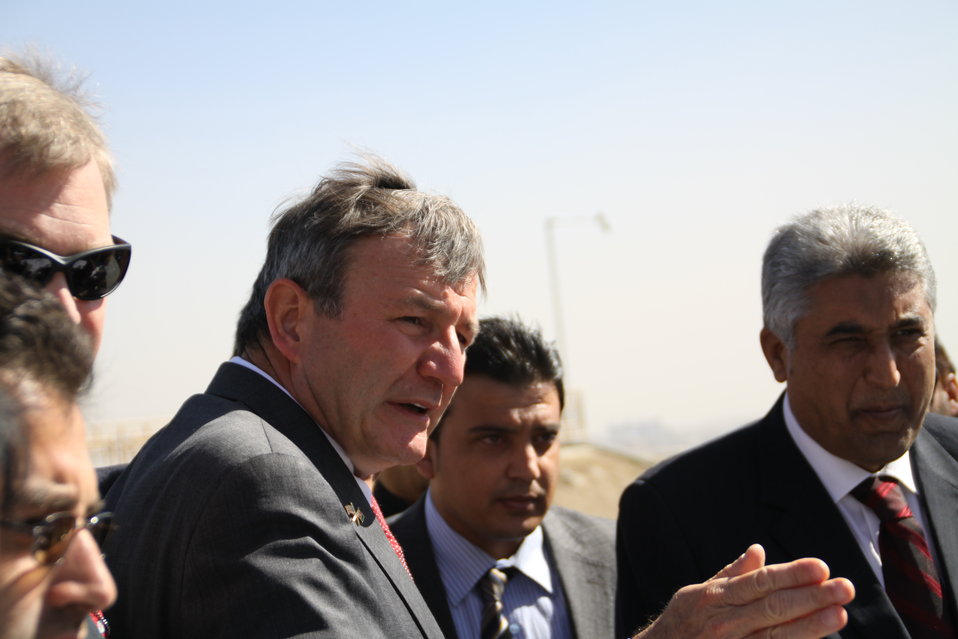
AVIPA Plus Wheat Seed Distribution 101005

US Ambassador Karl Eikenberry and USAID Acting Mission Director Kevin Brownawell joined the Minister of Agriculture, Irrigation and Livestock, H.E. Minister Mohammed Rahimi in signing a Memorandum of Understanding and distributing vouchers to area farmers for wheat and fertilizer.

US Ambassador Karl Eikenberry and USAID Acting Mission Director Kevin Brownawell joined the Minister of Agriculture, Irrigation and Livestock, H.E. Minister Mohammed Rahimi in signing a Memorandum of Understanding and distributing vouchers to area farmers for wheat and fertilizer.